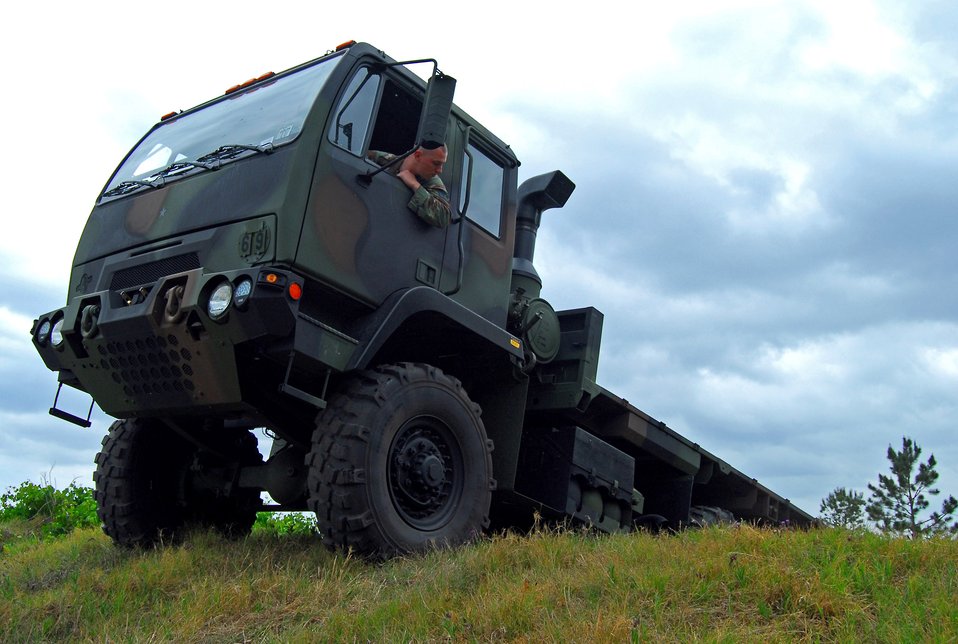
Going my way?

Staff Sgt. Tim Bele navigates a new medium tactical vehicle over an obstacle May 9 at Moody Air Force Base, Ga. The MTV is a replacement for the M923 five-ton utility truck. Sergeant Bele is a 820th Security Forces Group vehicle mechanic.